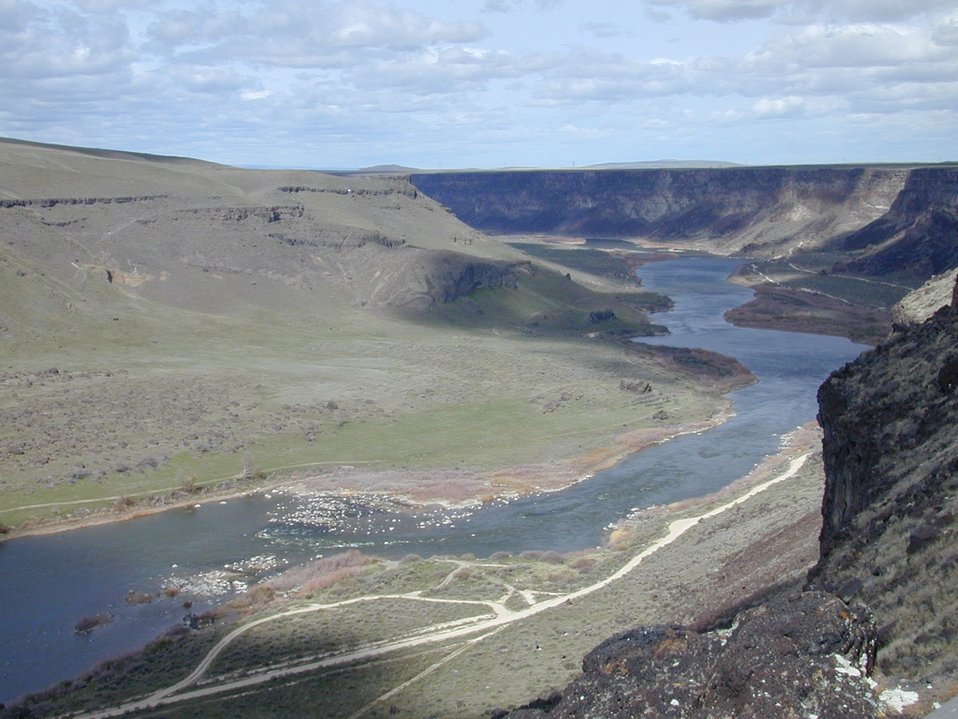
Scenic Snake River Birds of Prey National Conservation Area Lower Snake River District LSRD Snake River Canyon